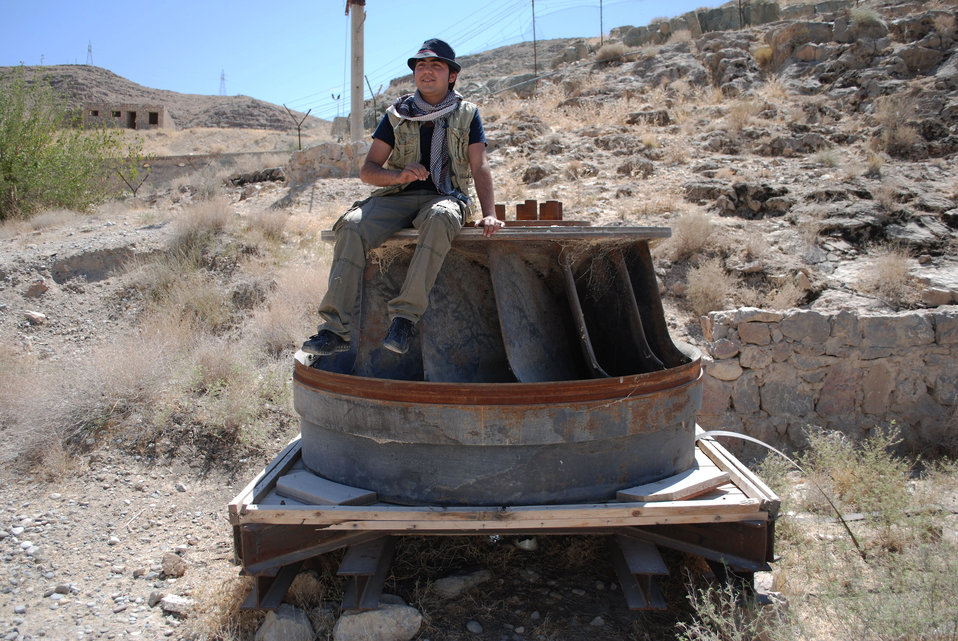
'On the Road' in Kandahar